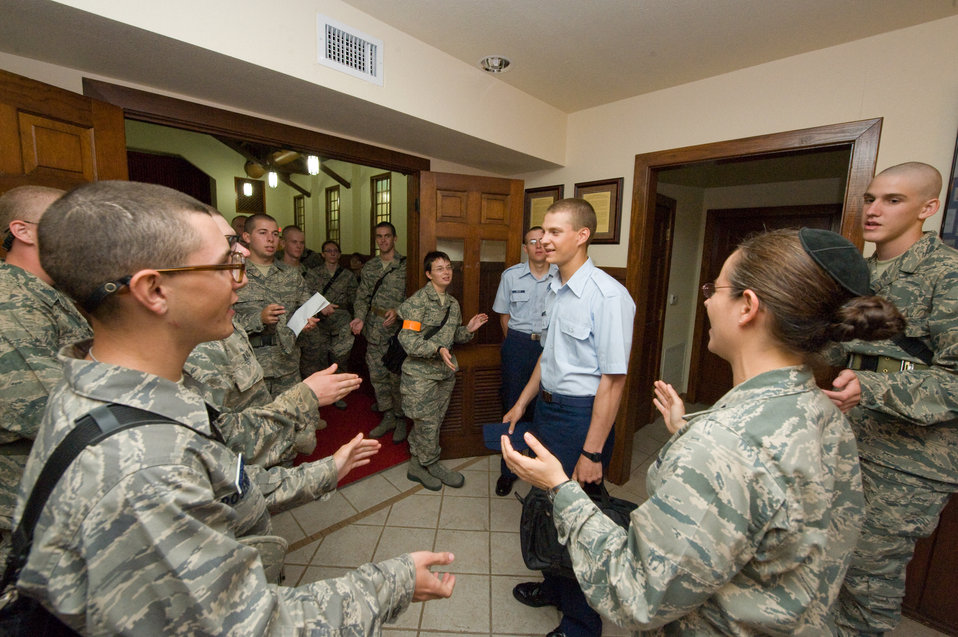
U.S. Air Force Chaplaincy

U.S. Air Force Rabbi, Chaplain, Captain Sarah D. Schechter leads a farewell song to wish mazaltov to Airman Basic Adam Miller who will be departing for a different base for his technical school. This was all part of evening le'il shabbat service on Friday, Sept. 4, 2009 at Lackland Air Force Base's Airmen Memorial Chapel. The more than 25 basic military trainees and other attendees participated in a religious education class, then Ma'ariv prayer service for the setting of the sun, followed by a meal provided by lay leaders supporting the service. Because of training schedules some ceremonies and events are earlier than traditionally held. By order of commanders, those who want to attend any or all religious services of their choosing are given full permission and opportunity to do so.